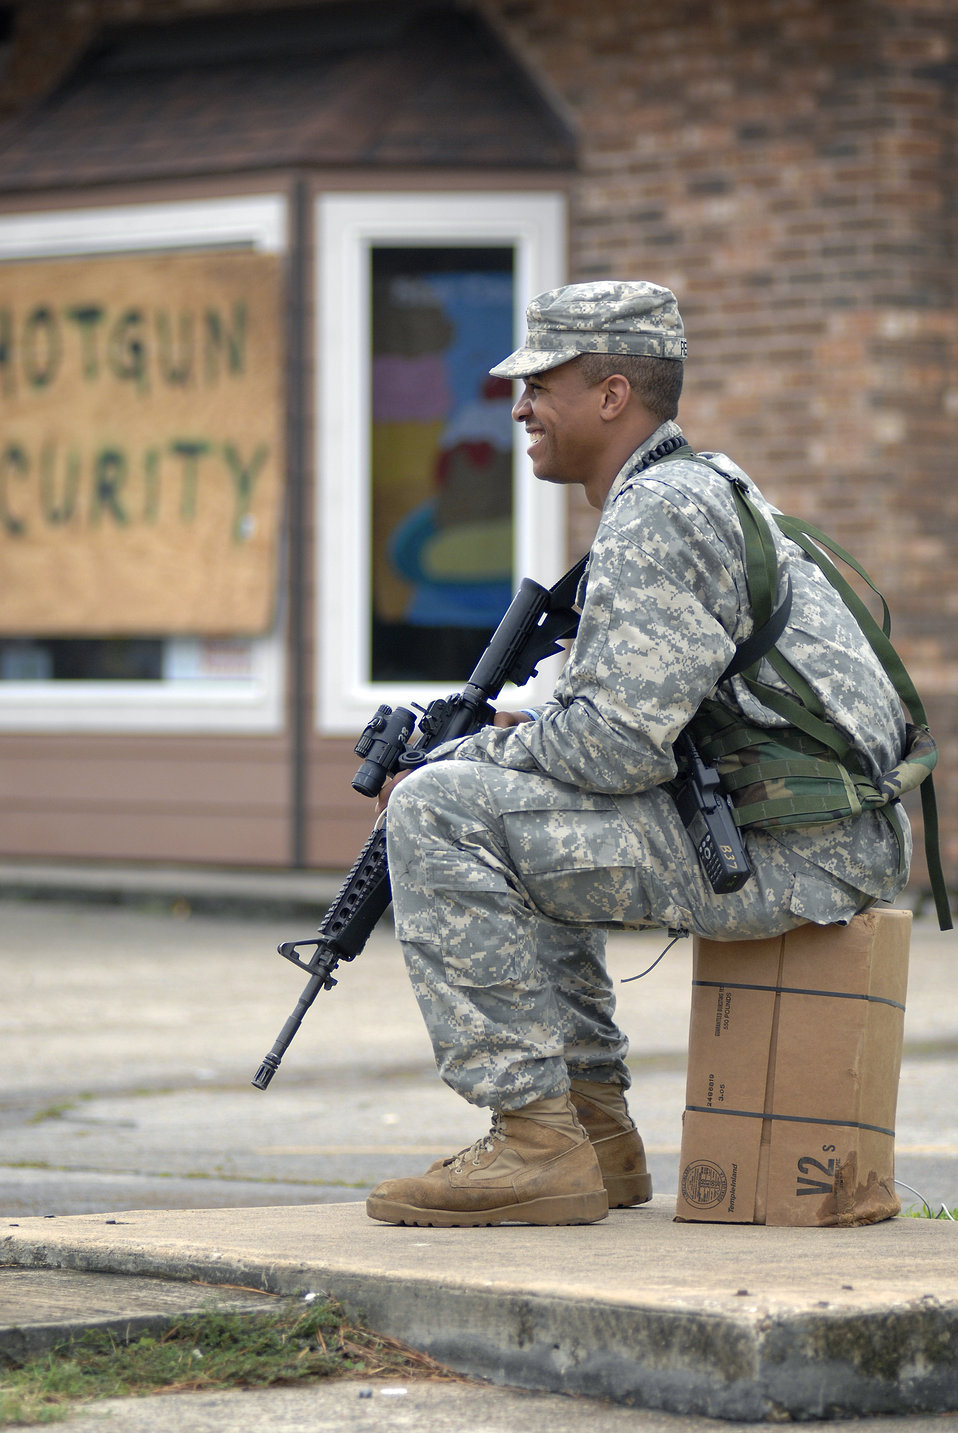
Protecting the streets

Louisiana Guardsman Sgt. Rodric Reed guards a pharmacy in Lake Charles, La. providing a presence to deter looters after Hurricane Ike Sept. 13. Sgt. Rodric is assigned to Bravo Company, 3rd Battalion, 156 Infantry.